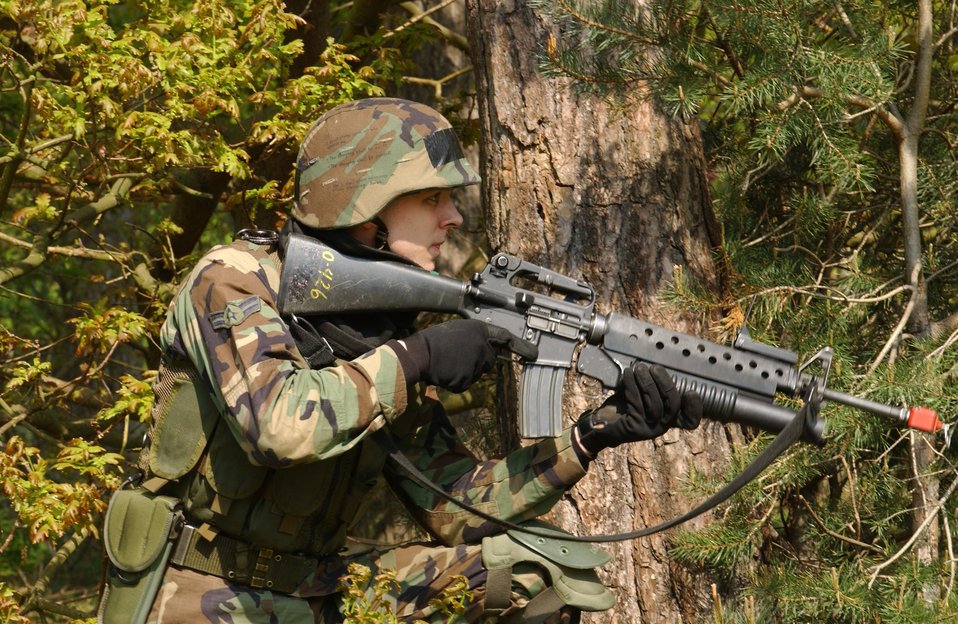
Seaching for the enemy

ROYAL AIR FORCE LAKENHEATH, England -- Airman 1st Class Brian Lail participates in a simulated ground attack for a local tactical evaluation exercise here May 10. The three day exercise tests the ability of the 48th Fighter Wing to organize, train and equip forces to survive and operate in real-world events. Airman Lail is assigned to the 48th Security Forces Squadron.